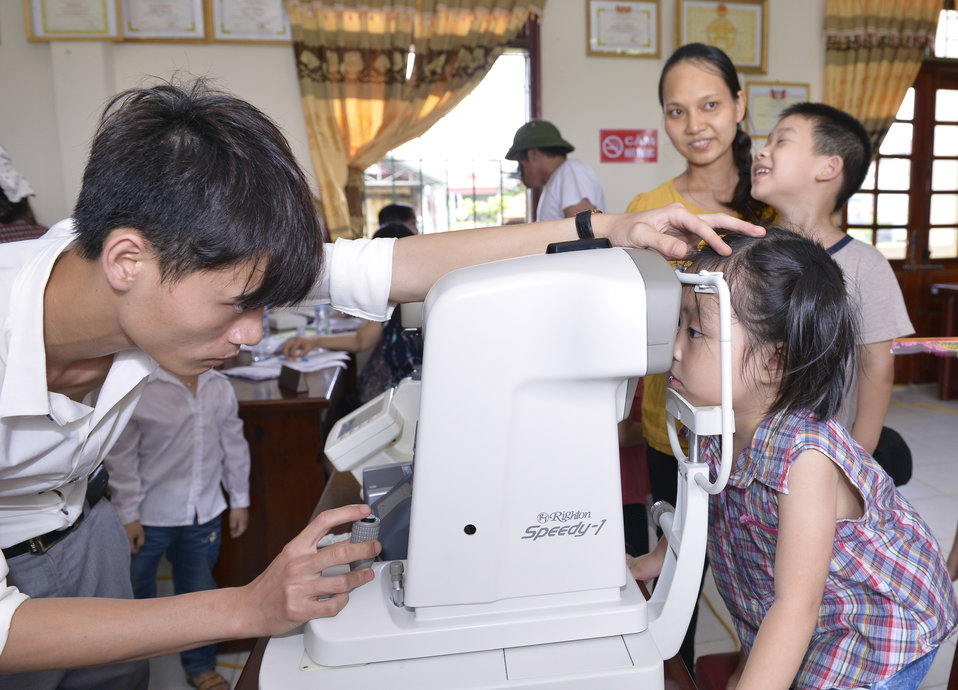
Eye screening for kindergarten children in Quoc Oai district of Hanoi

Quoc Oai, Hanoi. May 31, 2014.